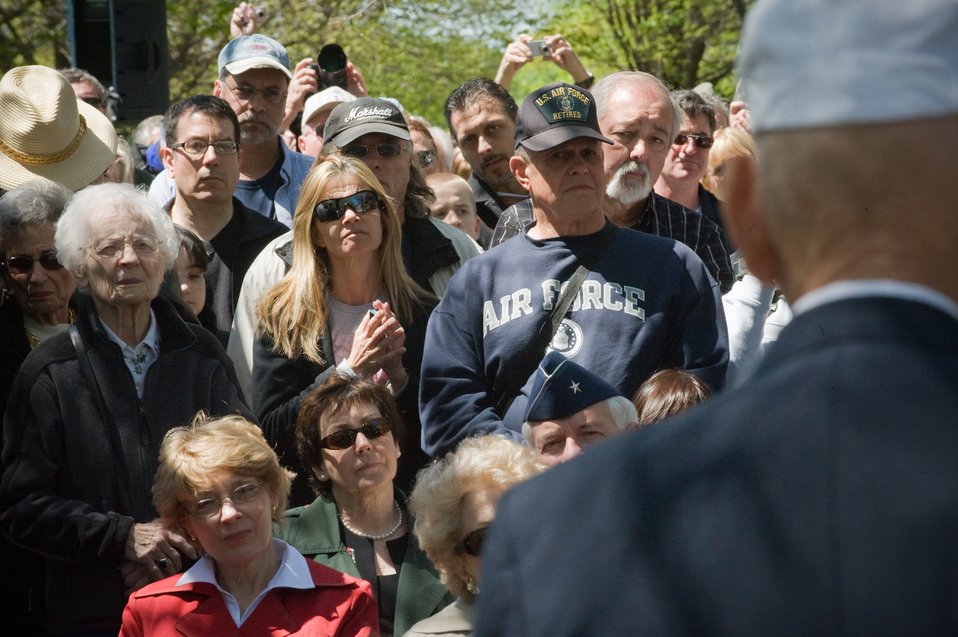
Doolittle Raiders Memorial Service

Lt, Col. Richard Cole (right) addresses the visitors attending the memorial service during the 68th reunion of the Doolittle Raiders. This event is being held at the National Museum of the U.S. Air Force at Wright-Patterson Air Force Base, Ohio on April 18, 2010. Three of the remaining eight surviving Doolittle Raiders attended this service. Thousands of people came to the museum to meet the Raiders in attendance.